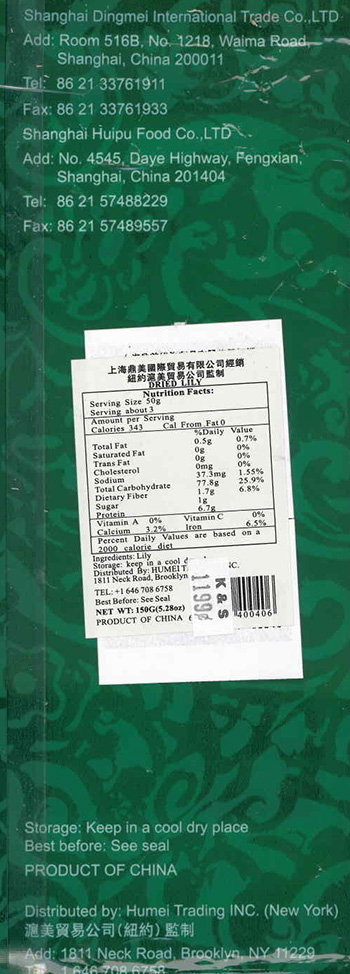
RECALLED – Humei Foods

February 4, 2014 – Product Recall – Humei Trading Inc. Issues Alert on Undeclared Sulfites in 'Dried Lily'.